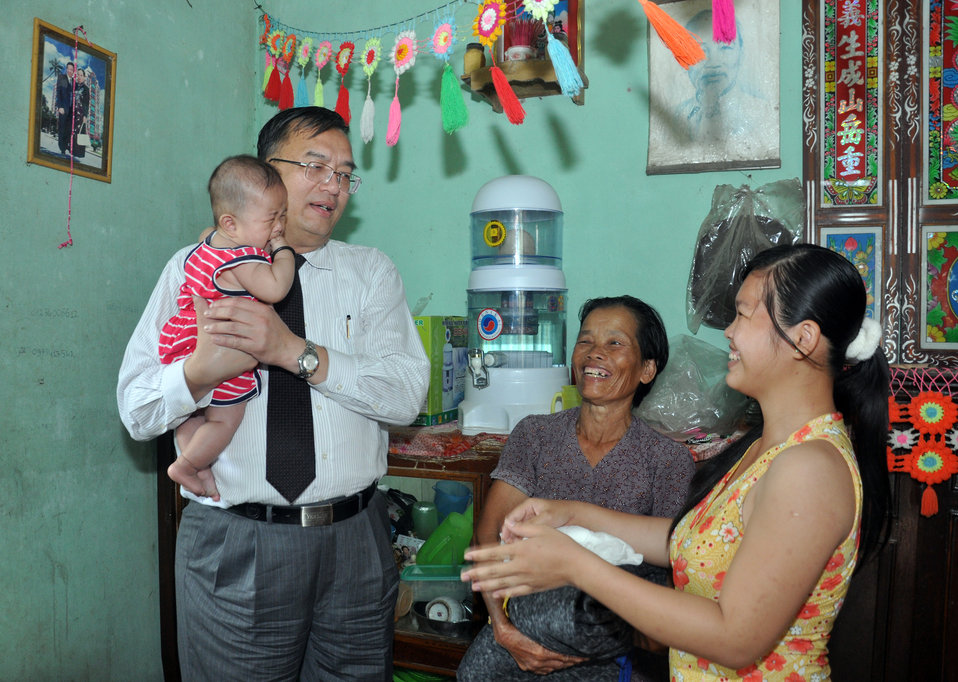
U.S. Consul General Le An visits USAID beneficiariesHuu Dang

USAID site visit to Long An Province to visit flood relief beneficiaries